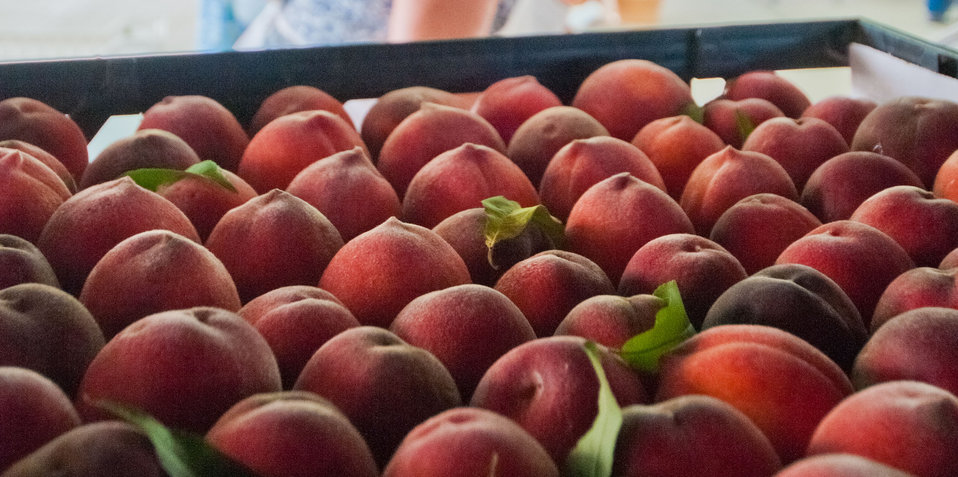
Peaches for sale at the Bath County Agricultural Education and Marketing Center, Owingsville, KY, on Friday, July 15, 2011. The Center was the recipient of a $400,000 Rural Business Enterprise Grant. It has given farmers and producers from Bath and surrounding counties the opportunity to manufacture and market their locally grown and locally produced value-added and “Kentucky Proud” branded products, including but not limited to, fresh produce, artisan crafts and specialty food products. The Center is open year-round and allow residents to sell products in four different retail categories, including Kentucky products, regional crafts, “green” groceries and bakery/deli. Several producers expressed their gratitude for Rural Development’s assistance in making the center a reality. The project was made possible through funding the American Recovery and Reinvestment Act of 2009 enacted by the 111th United States Congress in February 2009 and signed into law on February 17, 2009, by President Barack Obama.